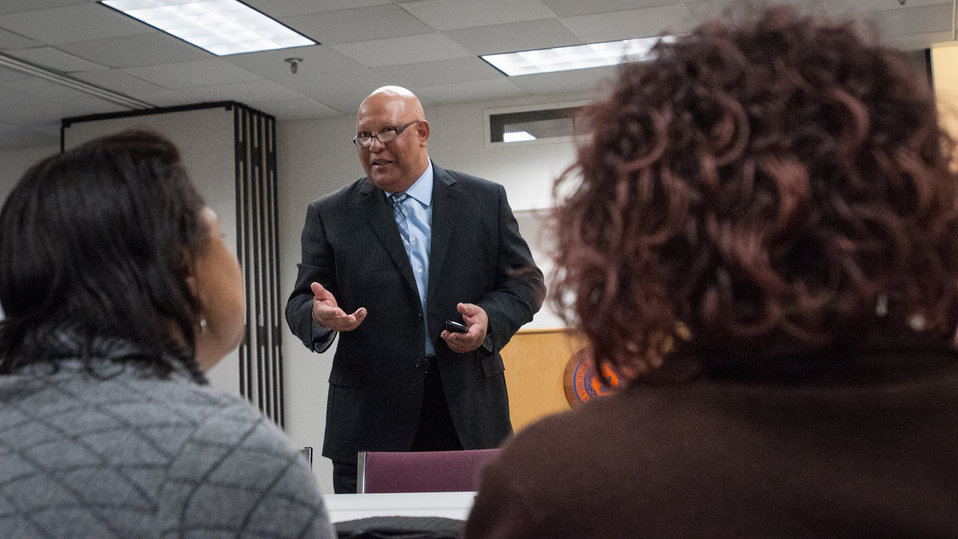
Fort Valley State University Southern Region SARE Program1890 Land Grant Liaison James H. Hill took farmers through the ins-and-outs of 'How to write a Winning Proposal & Identify Potential Grant Sources for Producers” during the “Virginia State University (VSU), USDA and Virginia Farmers Working Together” outreach workshop in the VSU, L. Douglas Wilder building on Thursday, March 7, 2013, in Petersburg, VA. Farmers shared and learned new ways to do more with USDA services, and how to apply for programs that will help grow their business.